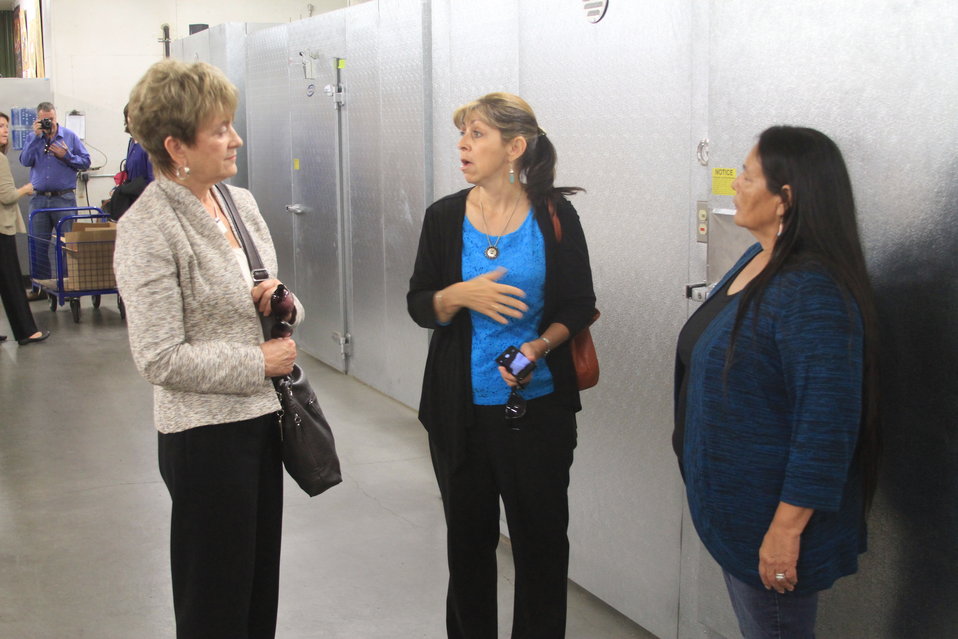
U.S. Department of Agriculture (USDA) Deputy Under Secretary for Food and Nutrition Service (FNS), Janey Thornton, Darlene Sanchez, Regional Division Director at FNS, and Theresa Lofton, Food Distribution Director for Cheyenne River Food Distribution on Indian Reservation (FDPIR), discuss the certification process for families to qualify for assistance under the FDPIR on the Cheyenne River Indian Reservation, SD, on Tuesday, Sept. 24, 2013.